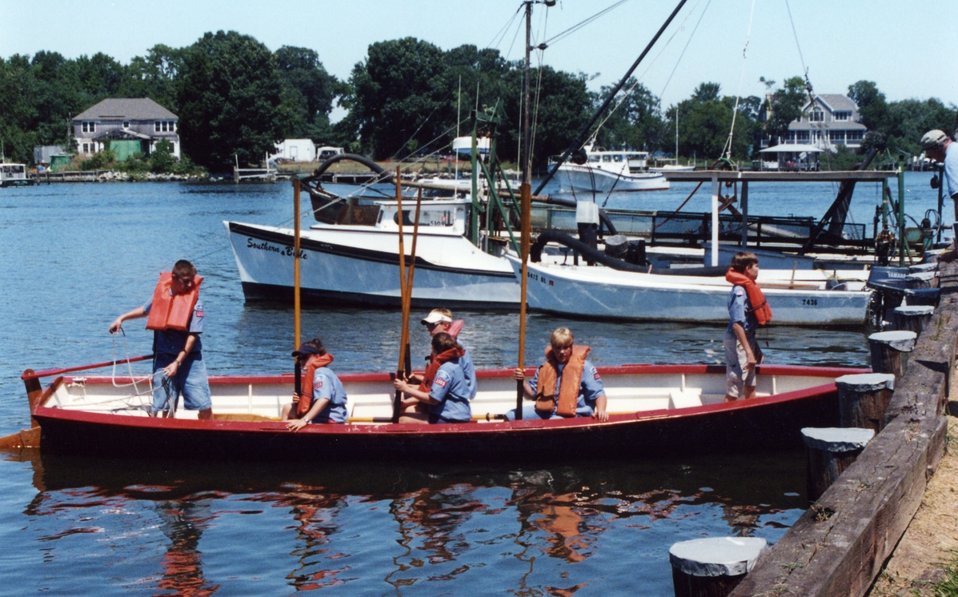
Sea Scouts dock at the Shadyside Blessing of the Fleet.